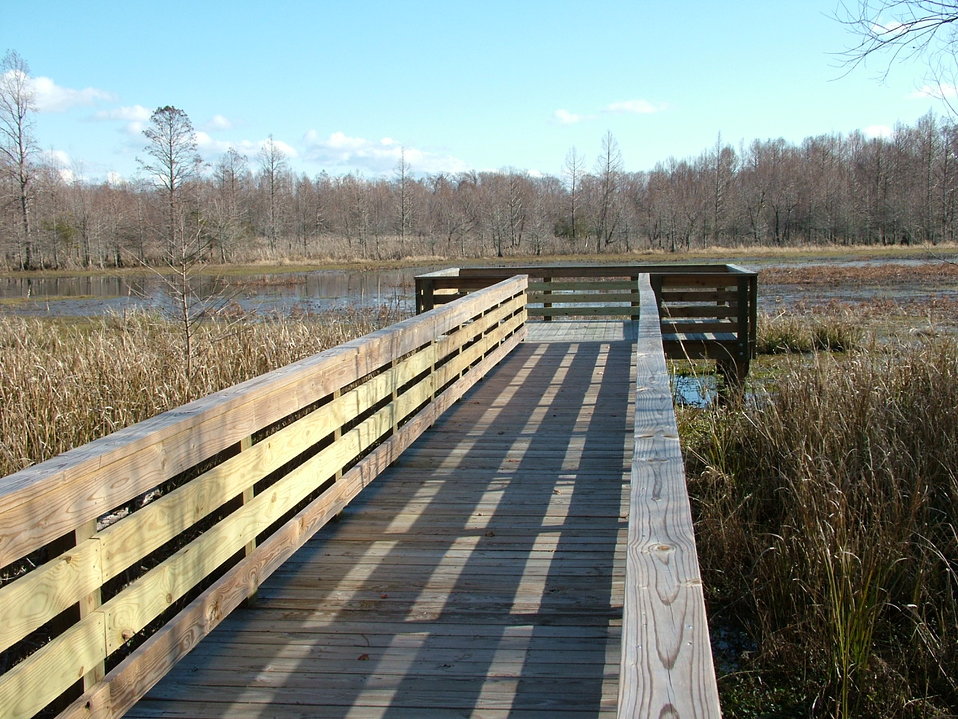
Fisher Slough Trail Deck

An observation platform off the Fisher Slough Trail at Mattamuskeet National Wildlife Refuge.